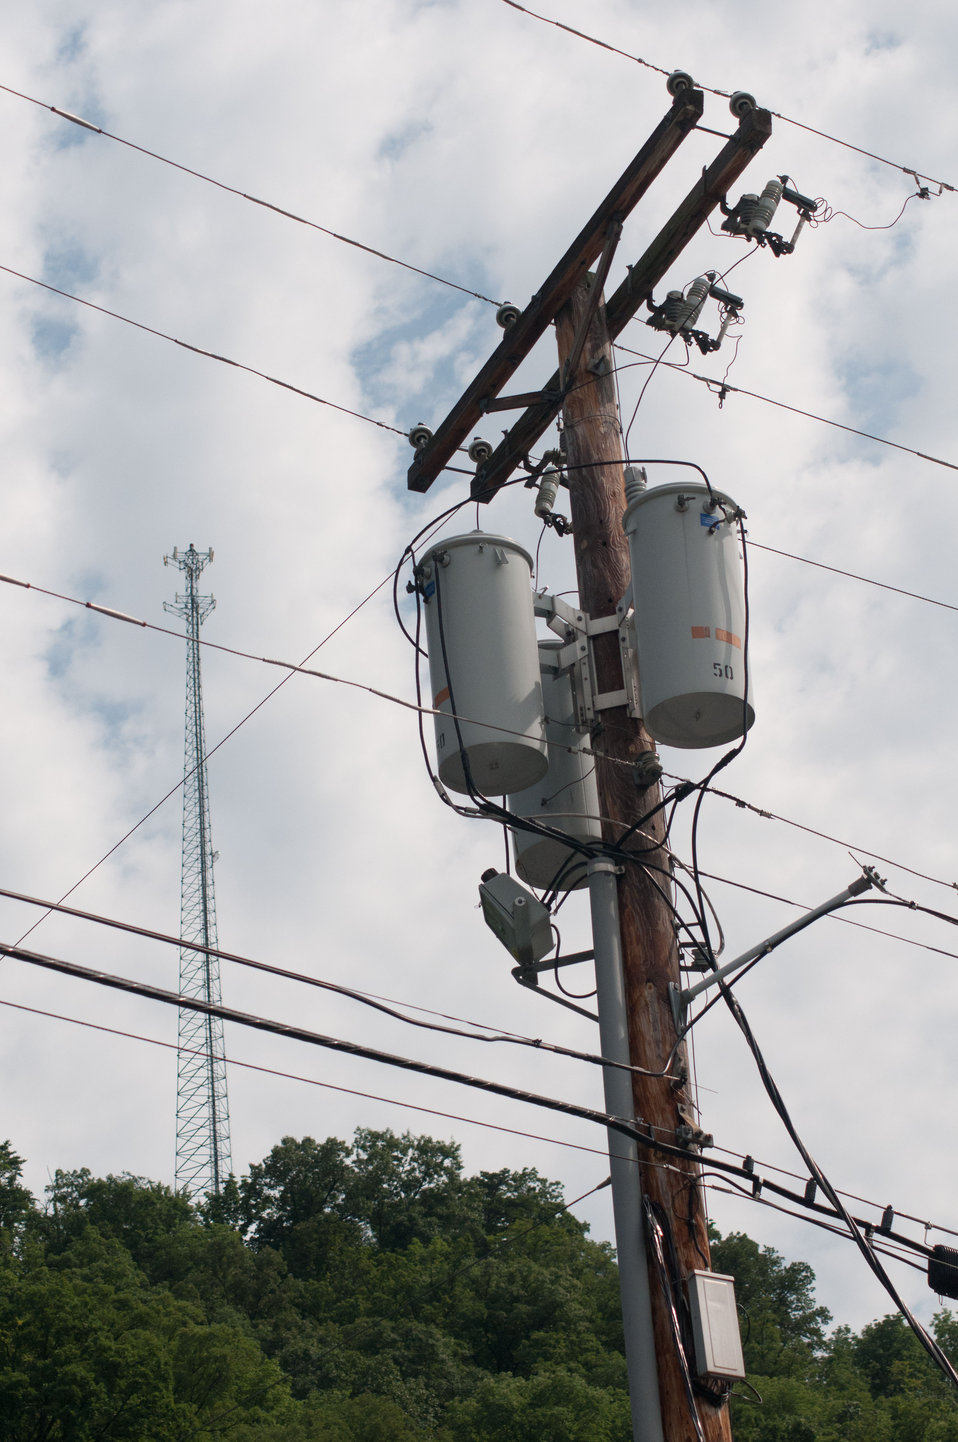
Power and communications lines between Lexington and Pikeville, KY, on Tuesday July 12, 2011. This is the Eastern Kentucky region of the Appalachian Mountains.